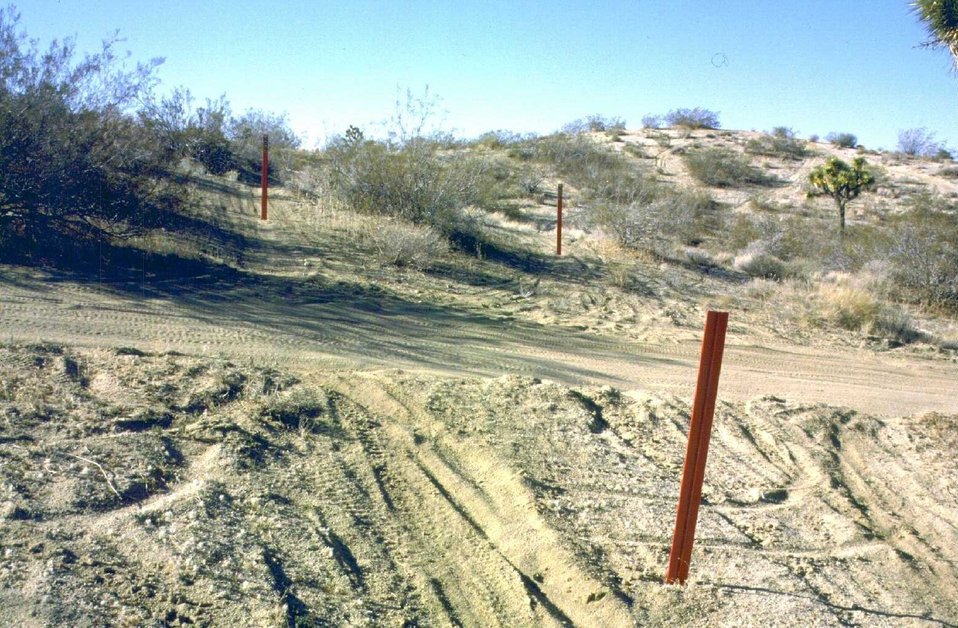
Active established trespass routes bypassing red route closed signs, crossing designated route to continue trespass on the other side.